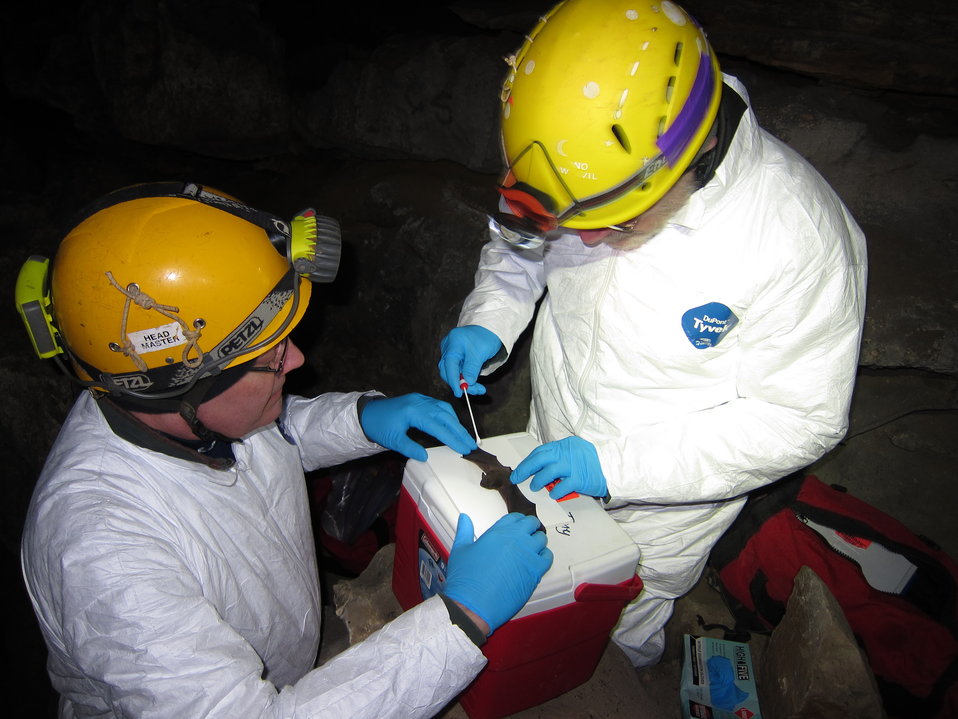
Researchers collect swab sample

Illinois Natural History Survey (University of Illinois) mammalogists Dr. Ed Heske (left) and Dr. Joe Merritt (right) collect a swab sample from a bat in a Hardin County, Illinois hibernaculum. 20 February 2013.